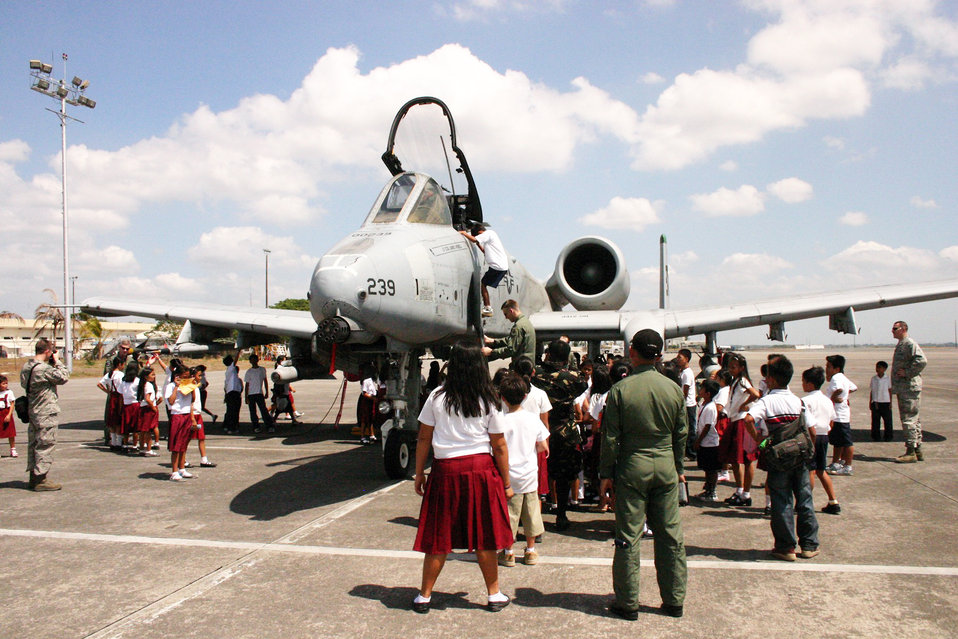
Students get first look at Philippine, U.S. militaries

Philippine students view an A-10 Thunderbolt II on the flightline during Balikatan 2010 March 15, 2010, at Freeport Clark, Philippines.